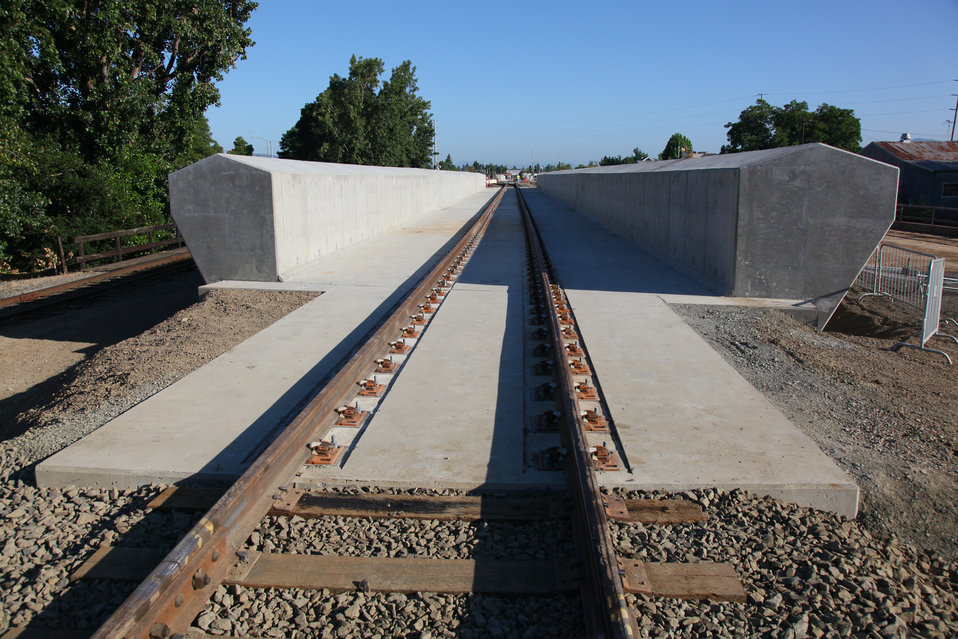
New railroad bridges open in Napa

A new railroad bridge in Napa, Calif., awaits its first train June 22, 2011. It’s one of two new bridges in Napa’s Oxbow District built under the Napa River-Creek Flood Protection Project, a joint effort of the Corps, the city of Napa, and the Napa Flood Control and Water Conservation District to reduce flood risk for the city. The bridge replaces a lower adjacent railroad bridge that blocked the Napa River in high water, often causing flooding in downtown Napa.